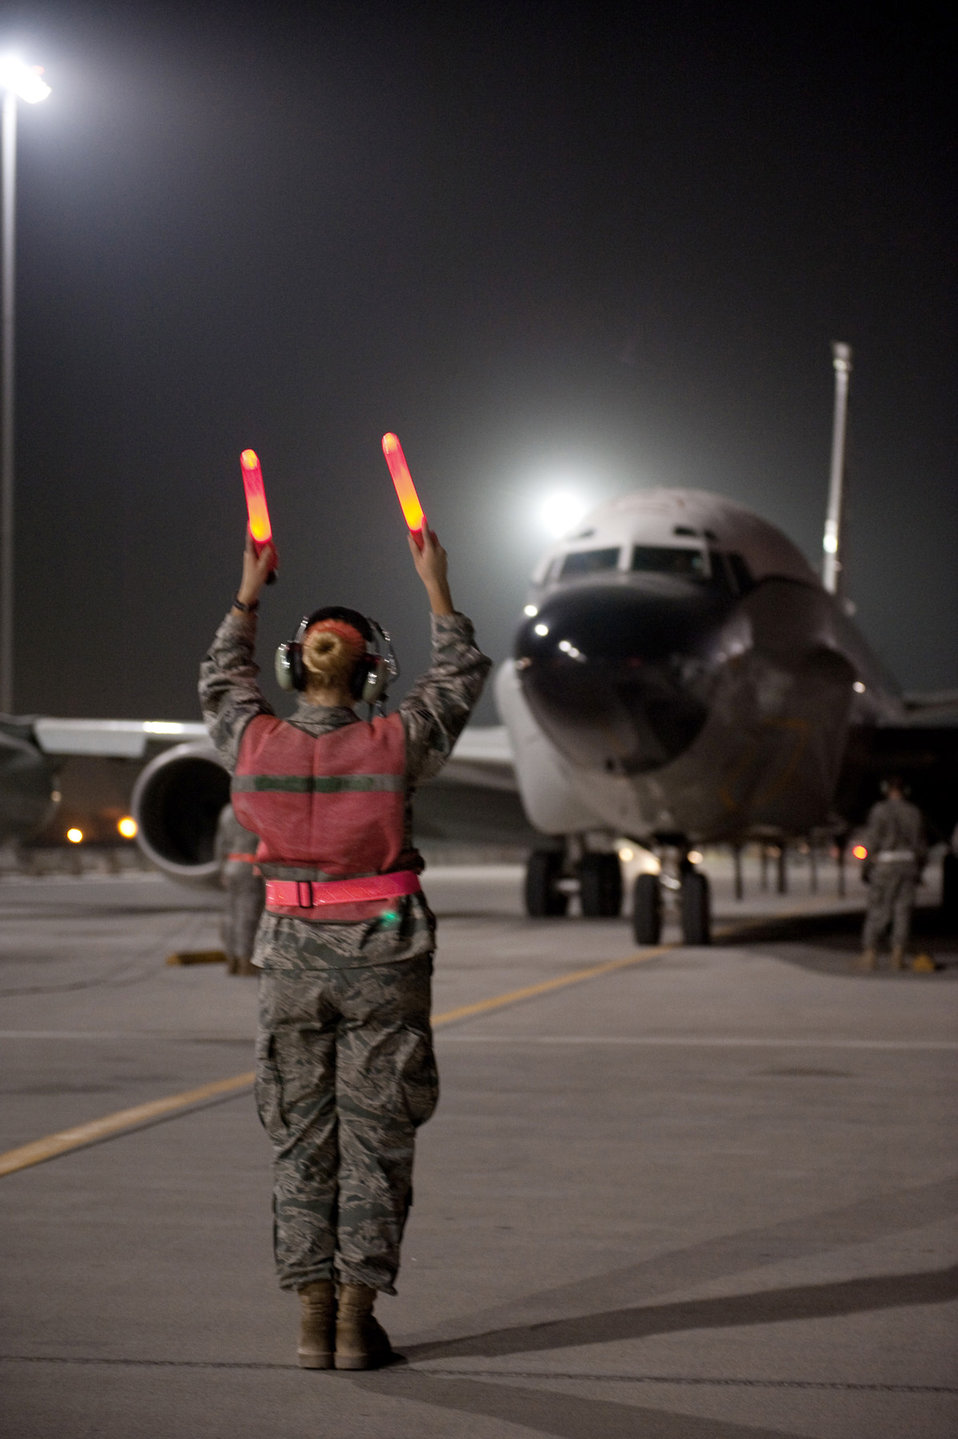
Unit surpasses consecutive 7,000 days with forces in Southwest Asia

Senior Airman Jayme Warner guides a RC-135V/W Rivet Joint Oct. 7, 2009, at an air base in Southwest Asia. Airman Warner is a 55th Aircraft Maintenance Unit engine mechanic deployed from Offutt Air Force Base, Neb.